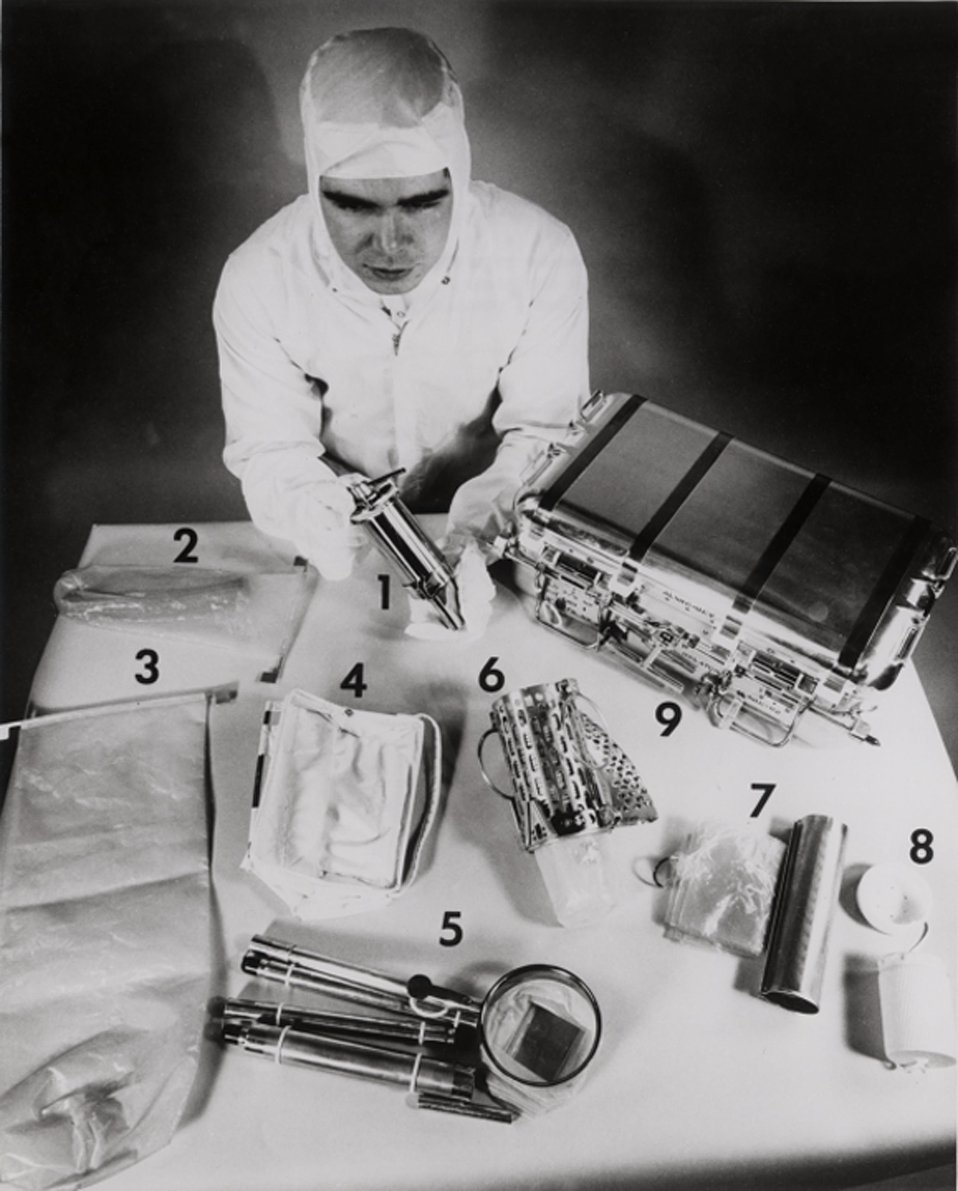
Geological sampling equipment carried on the Apollo missions in 1971
(1) lunar environmental sample container
(2) organic sampler
(3) solar wind bag
(4) weigh bag